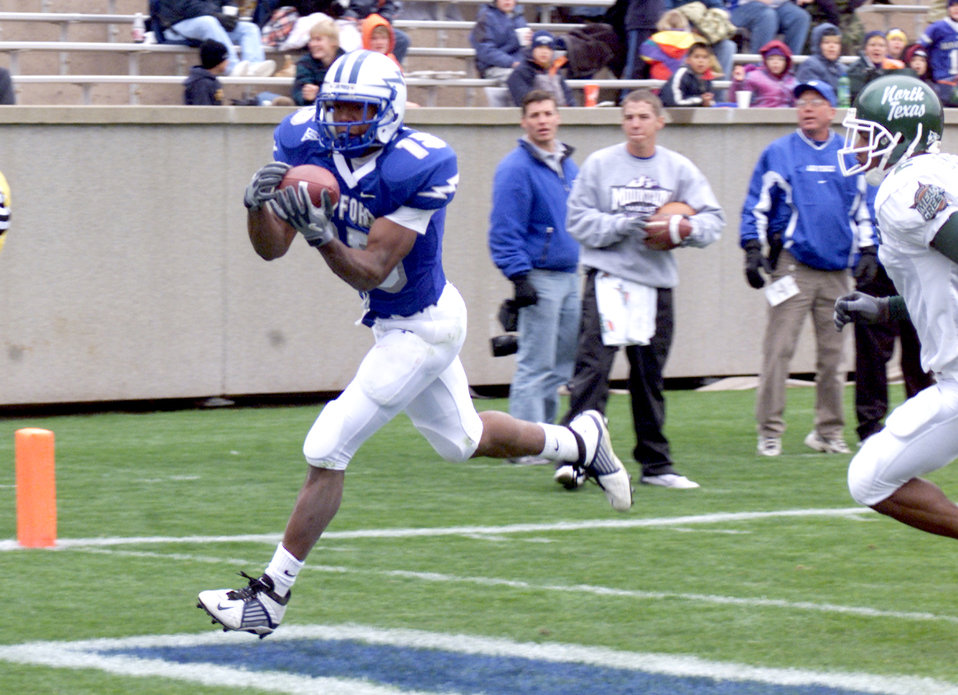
Falcon game

U.S. AIR FORCE ACADEMY, Colo. -- Air Force halfback Darnell Stephens tucks the ball after an 18-yard touchdown reception during the Air Force Academy Falcon's 34-21 win over the University of North Texas on Sept. 13. The Falcon's added 156 passing yards and three touchdown receptions to their nationally ranked rushing attack, to notch their third win of the season. The Falcons meet the University of Wyoming Cowboys on Sept. 20 at Falcon Stadium.